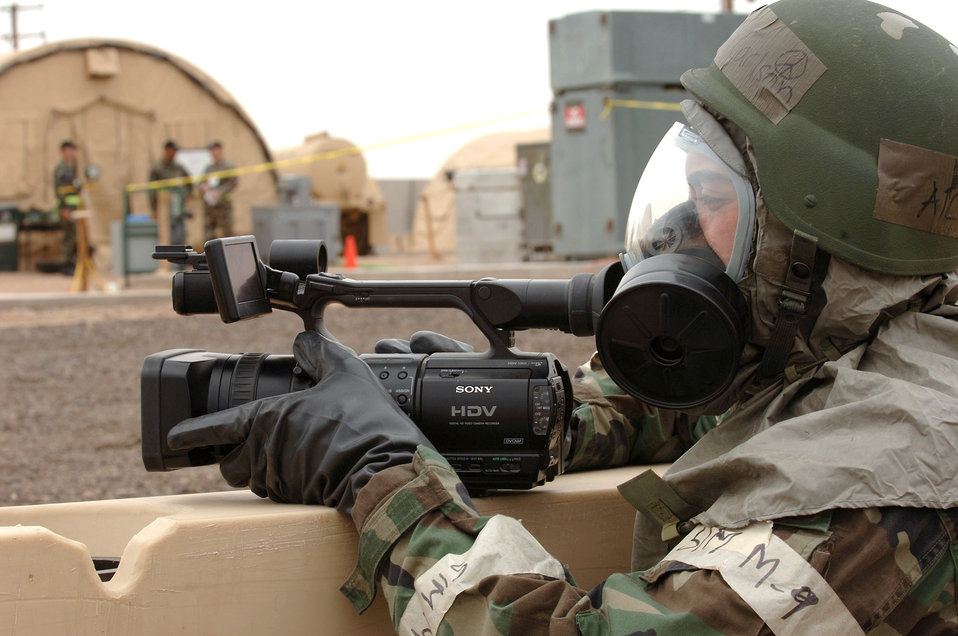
Video documentation

Airman 1st Class Roidan Carlson documents post-attack reconnaissance sweeps during an Alarm Black, mission oriented protective posture 4, exercise in a simulated deployment in Desert Lightening City on Tuesday, April 4, 2006. Exercise evaluation team members shown in the background keep watch on personnel wartime responses. Airman Carlson is a videographer with the 355th Communications Squadron.